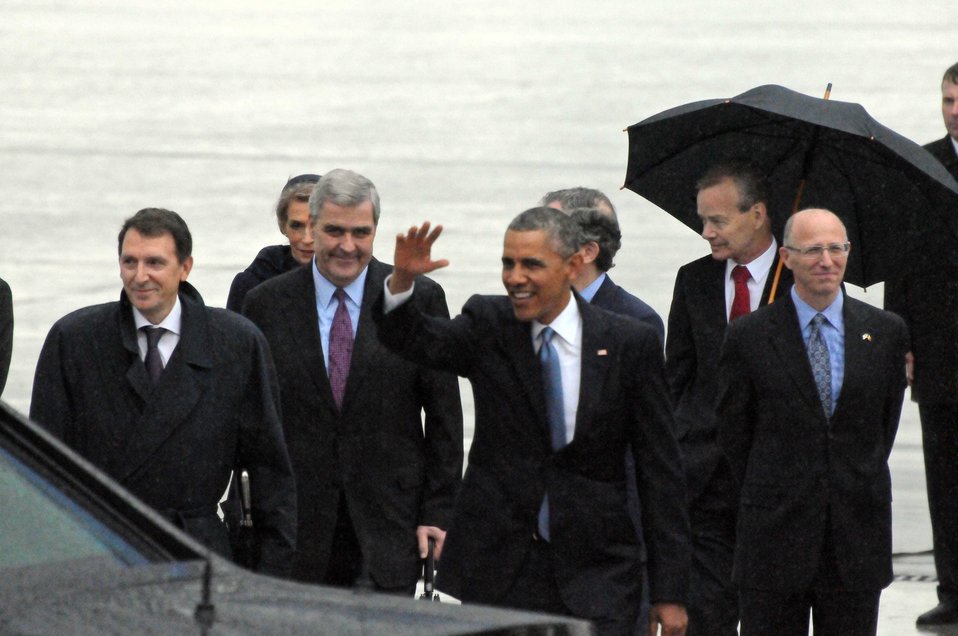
President Obama Arrives in Belgium

U.S. President Barack Obama, flanked by U.S. Ambassador to NATO Doug Lute, Embassy Brussels Chargé d'Affaires Mark Storella, and U.S. Ambassador to the European Union Tony Gardner, waves after arriving at Melsbroek Air Base outside of Brussels, Belgium, on June 4, 2014.